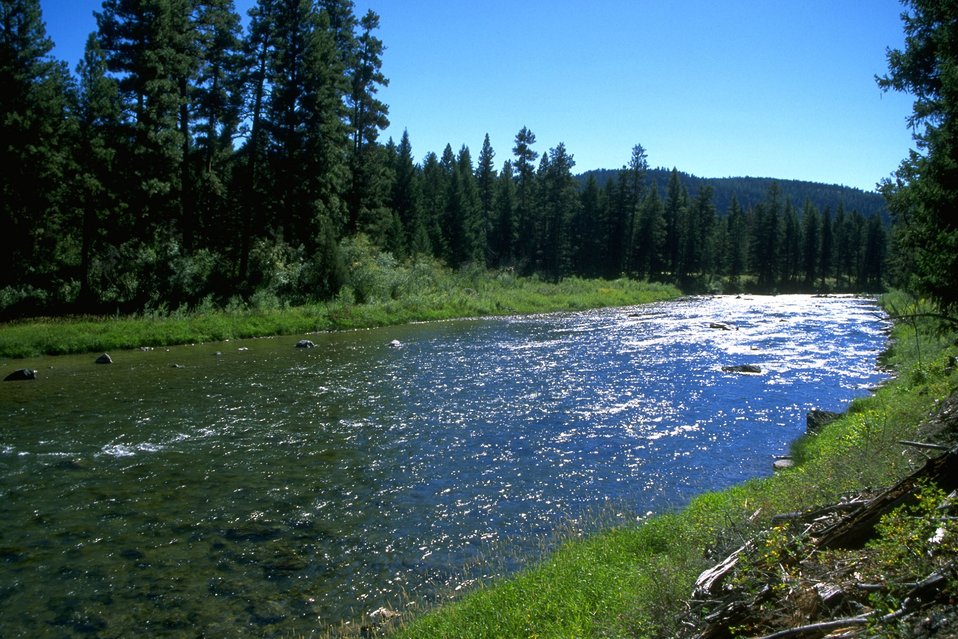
Scenic shot of Blackfoot River